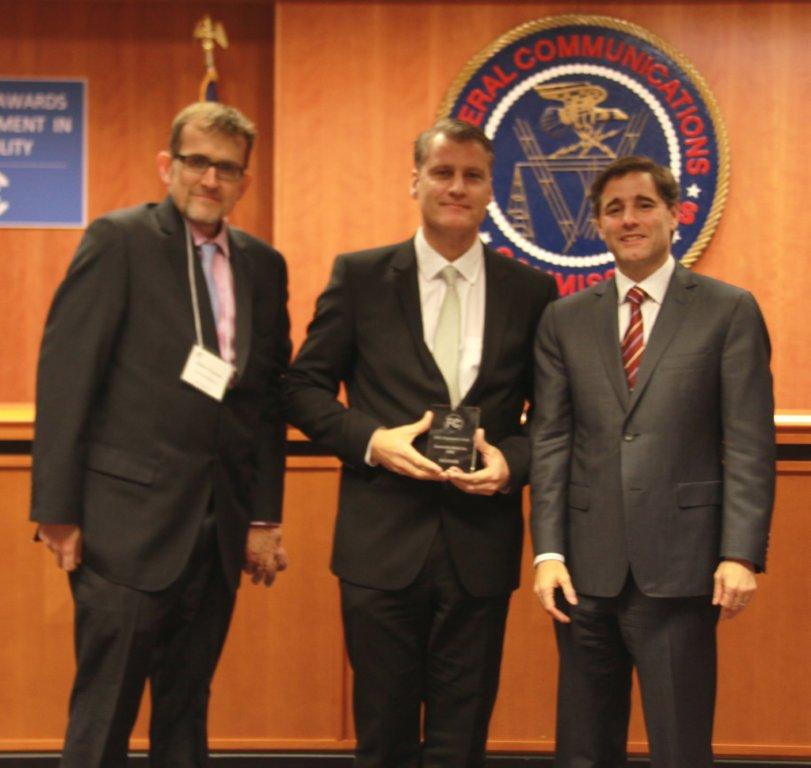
Robert Pearson and David Errington, AMI, Accept Video Programming Award

Robert Pearson & David Errington, accept the Video Programming Award from Chairman Genachowski for AMI.